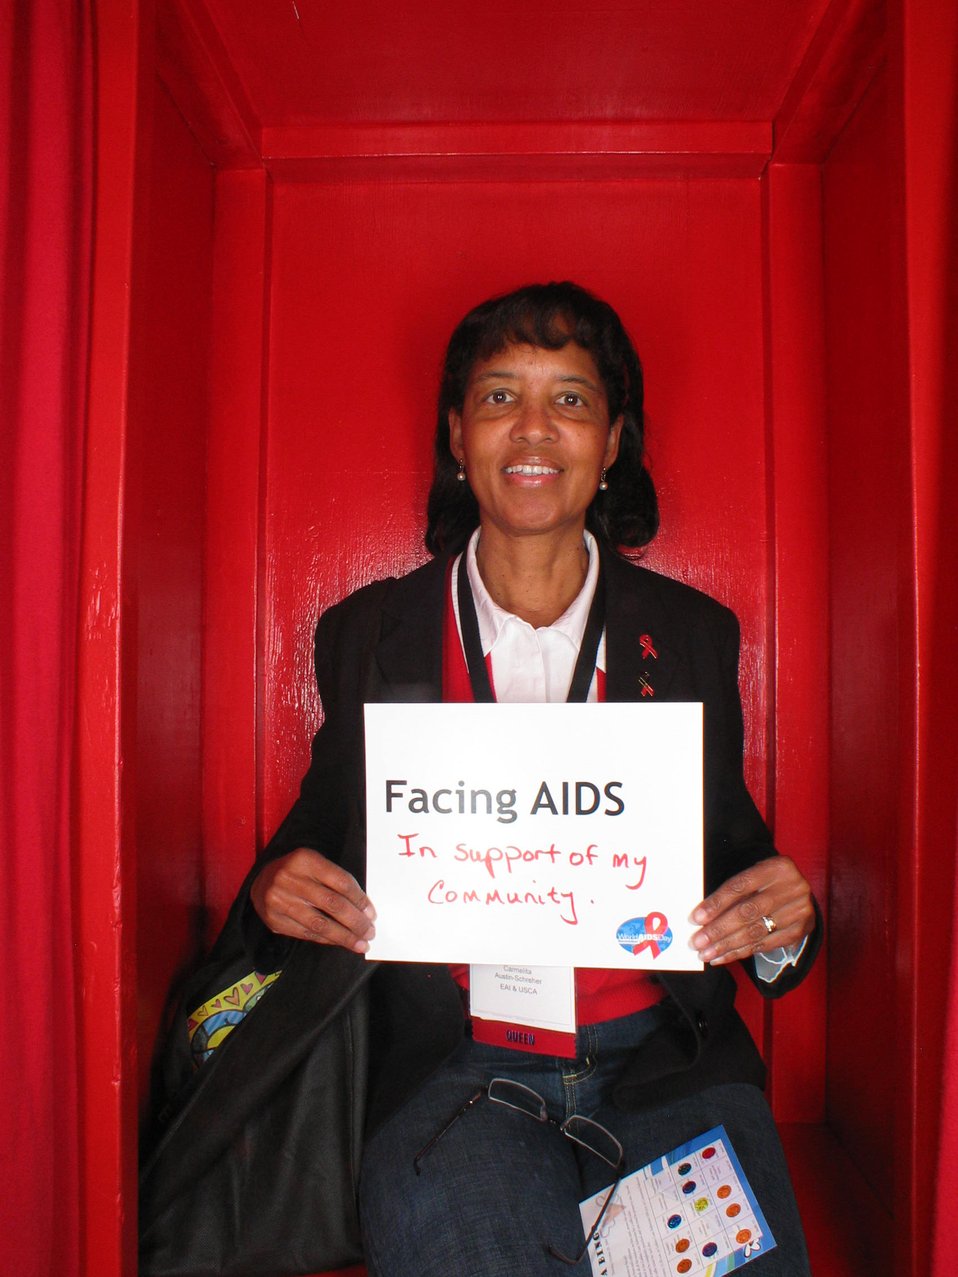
Facing AIDS in support of my community.